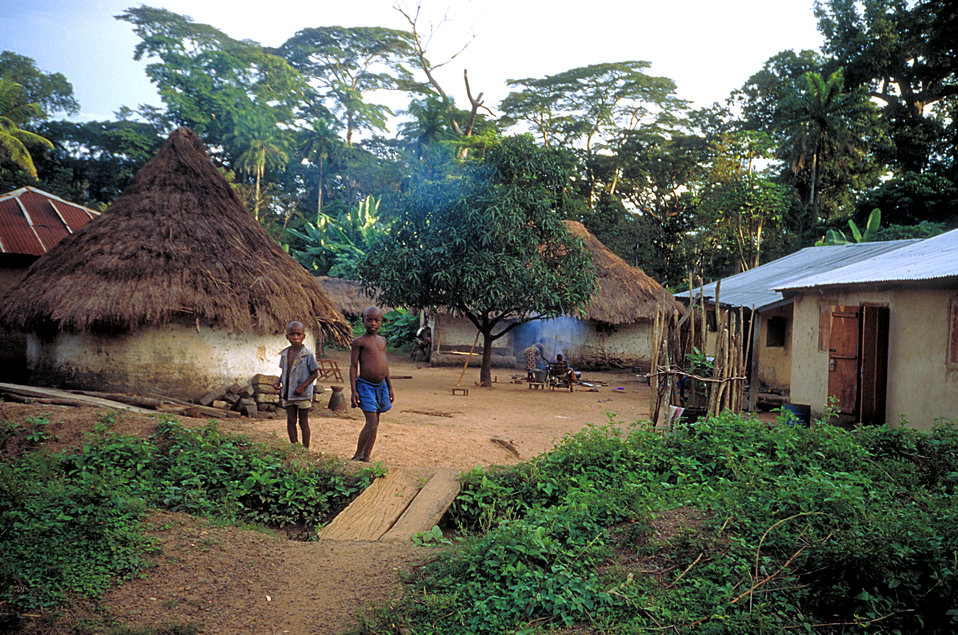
African village.